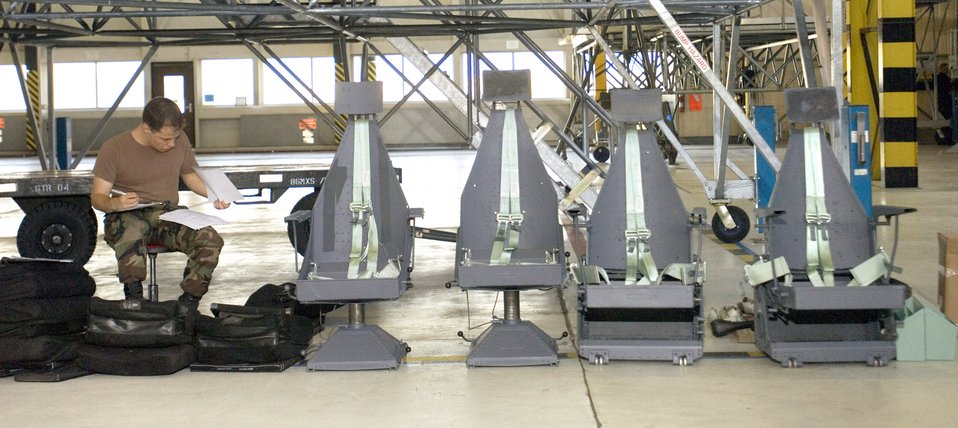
Isochronical inspection

Senior Airman Jason Noesner prepares to refurbish C-130 Hercules cockpit seats during an isochronical inspection at Ramstein Air Base, Germany, on July 18. Airmen Noesner, of Akron, Ohio, is a crew chief with the 86th Maintenance Squadron. Mechanics, technicians and specialists from the 86th MXS typically take care of the isochronical inspections and crew chiefs are responsible for the seats, life rafts and the aircraft battery.